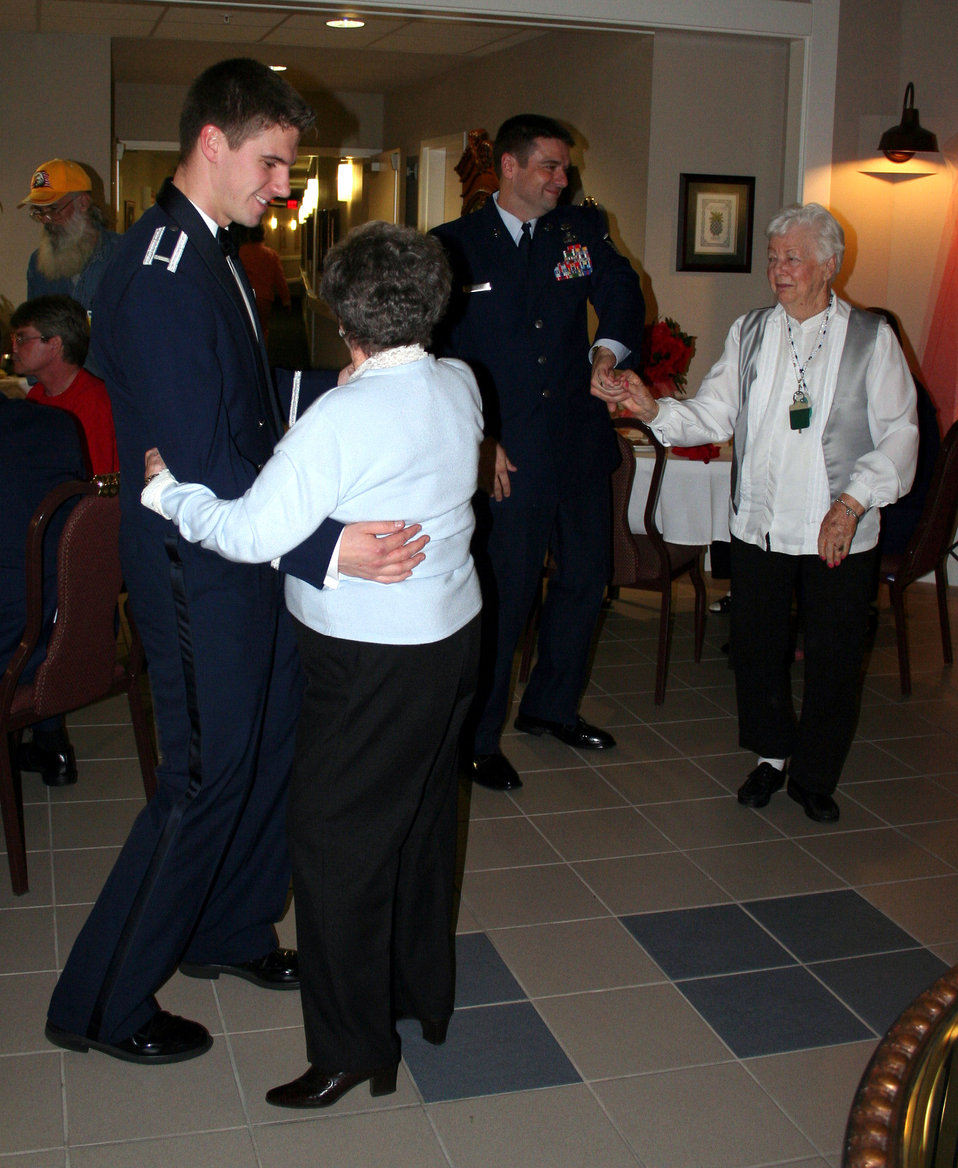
Airmen bring romance and roses to Air Force Enlisted Village

Airmen from nearby Hurlburt Field and Eglin Air Force Base joined residents at the Air Force Enlisted Village's Hawthorn House in Shalimar, Fla., Feb. 9 for their Valentine's Day Ball. Hawthorn House is the AFEV's assisted living residence. The ball included dinner and a dance.